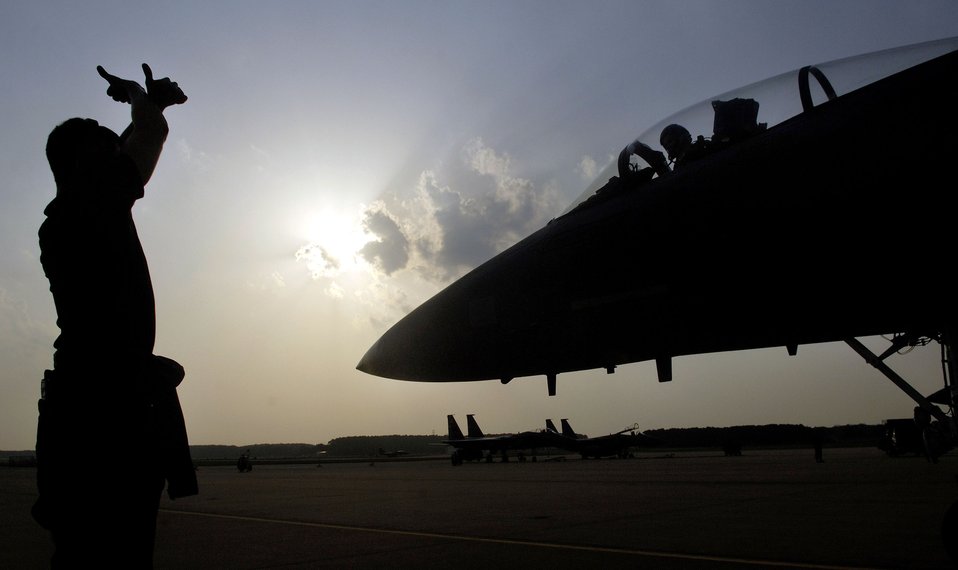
Langley Aircraft Return Home

Senior Airman Ryan Rogers marshals in Capt. Matt Bruckner at Langley Air Force Base, Va., on July 28. The 27th, 71st and 94th Fighter Squadrons flew sorties and participated in exercises around the country while upgrades were done to their home runway.